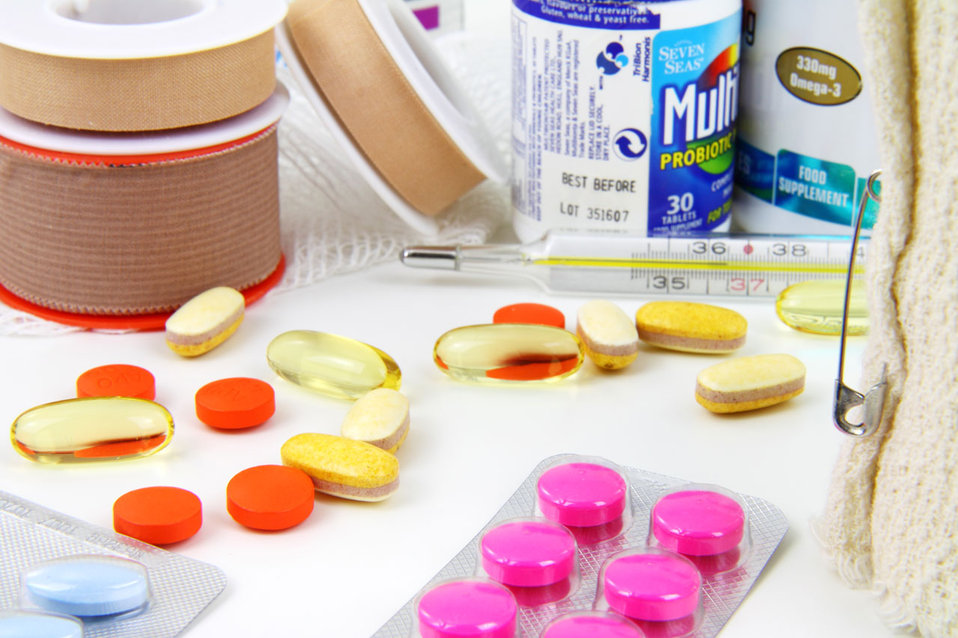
Medicines theme picture.